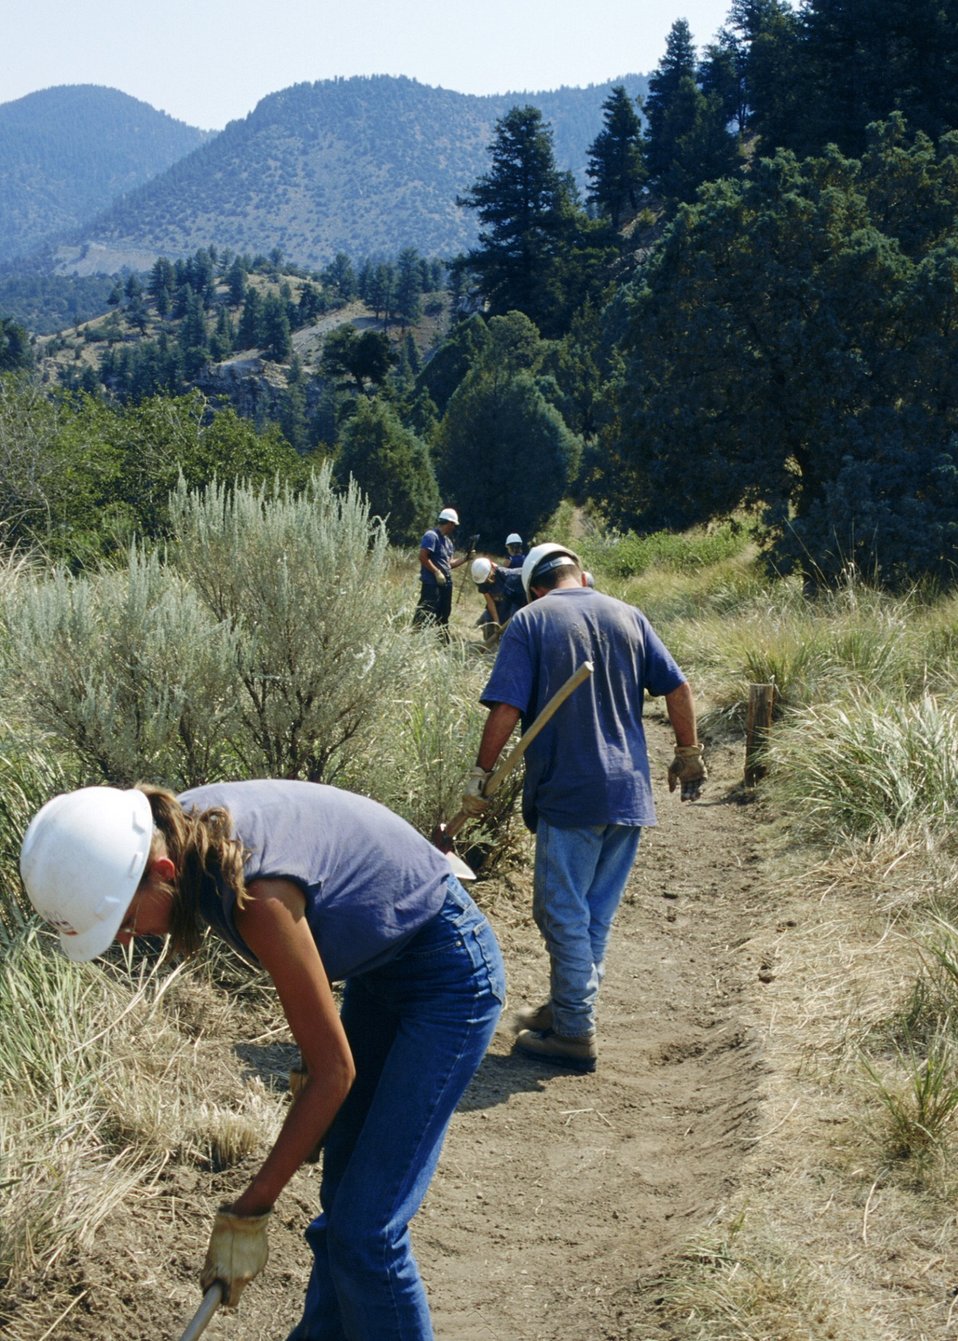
Trail Crow